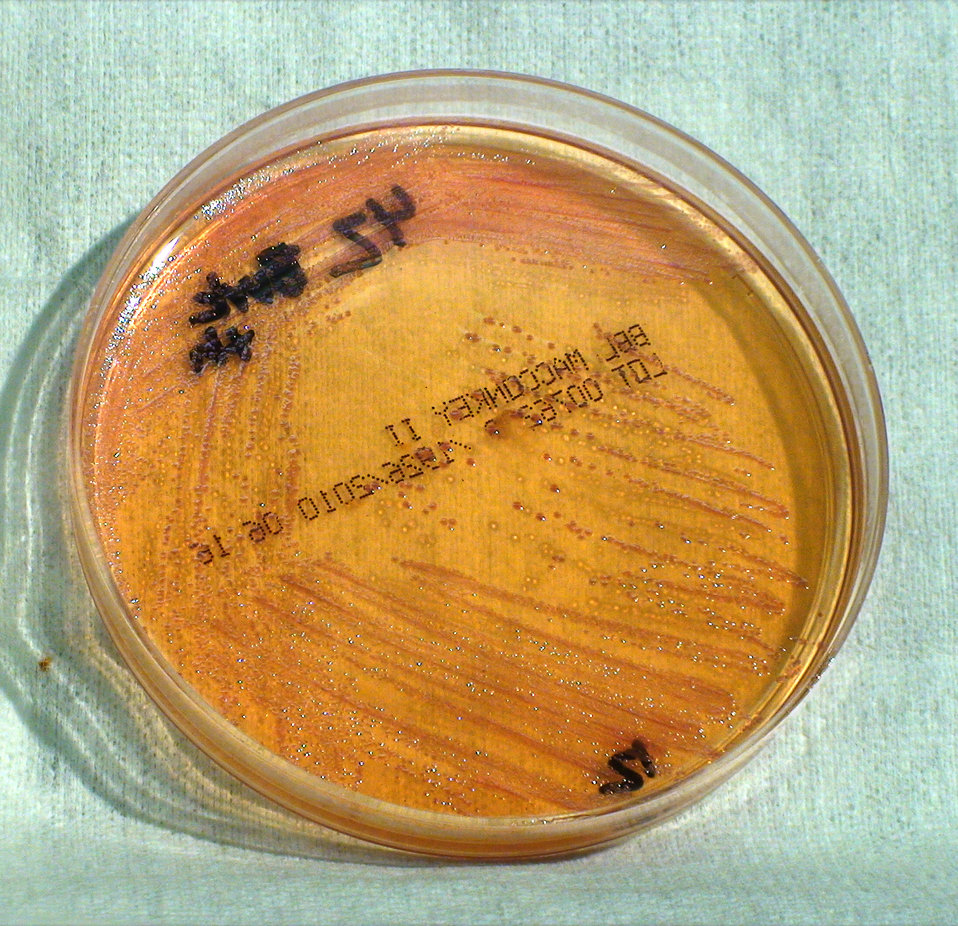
This photograph depicts the colonial morphology displayed by Gram-negative Burkholderia thailandensis bacteria, which was grown on a medium of MacConkey agar, for a 48 hour time period, at a temperature of 42�C. See PHIL 12411, for a closer view of these bacterial colonies. Also, see both PHIL 12405 and 12406, for views of this bacterial specie, grown on the same medium, for the same amount of time, however, at a lesser temperature of 37�C, and note that PHIL 12419 and 12420 depict the same bacterial specie grown on the same media, but at a lesser temperature (37�C), and for only 24hrs. Take a look at PHIL 12427 and 12428 colonial growth on the same medium and temperature, but at half the time period (24hr).